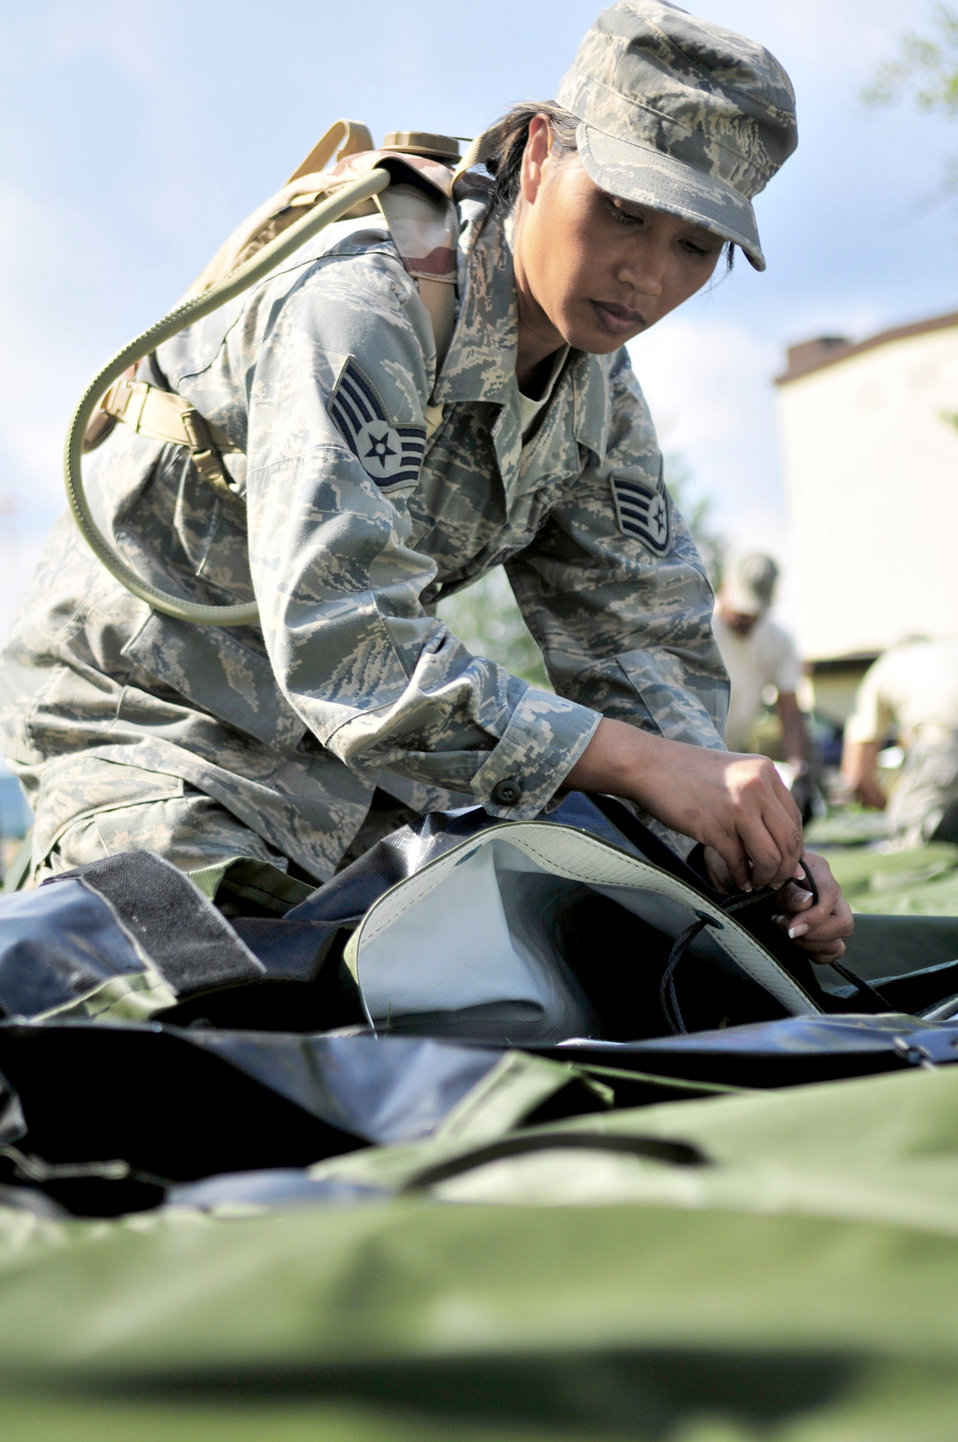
Ramstein AB medics

Staff Sgt. Glenda Castillo ties strings used to connect sides of a tent designed to house up to ten patients during set up of the Ramstein Mobile Aeromedical Staging Facility training site Aug. 2, 2010, at Ramstein Air Base, Germany. Each member of the MASF is part of a group of volunteers who man the MASF positions on a two-year basis, knowing as combatant commander enablers they are expected to deploy with only 24 hours notice. Sergeant Castillo is an 86th Medical Group technician.